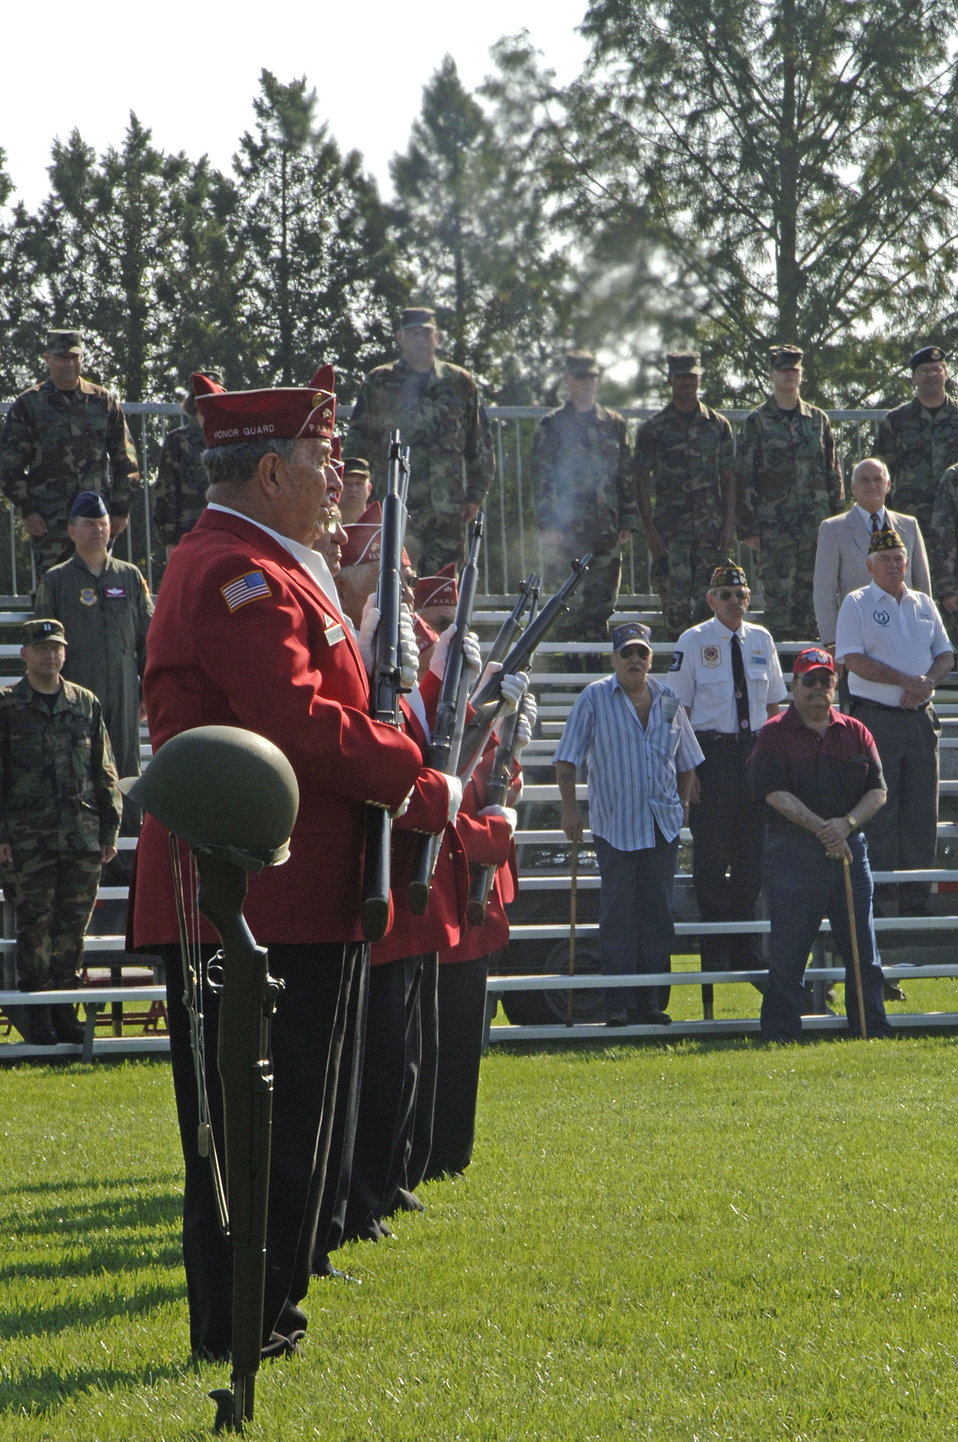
POW/MIA ceremony at Scott AFB

Members of the Polish-American War Veterans perform a 21-gun salute in honor of the prisoners of war and missing in action servicemembers still unaccounted for during a POW/MIA ceremony at Scott Air Force Base, Ill., Sept. 15.